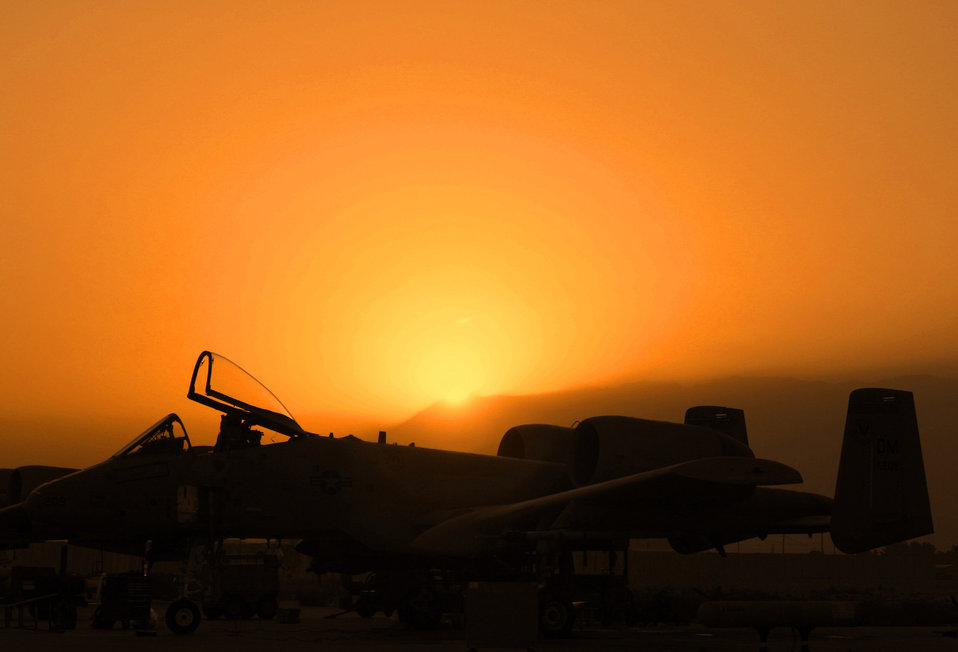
Thunderbolts on patrol

BAGRAM AIR BASE, Afghanistan (AFPN) -- The setting sun silhouettes an A-10 Thunderbolt II after a combat mission. Since Sept. 15, A-10s here have flown more than 1,700 combat sorties, totaling more than 6,000 combat hours in support of Operation Enduring Freedom. The A-10 was the first Air Force aircraft specially designed for close-air support of ground forces.